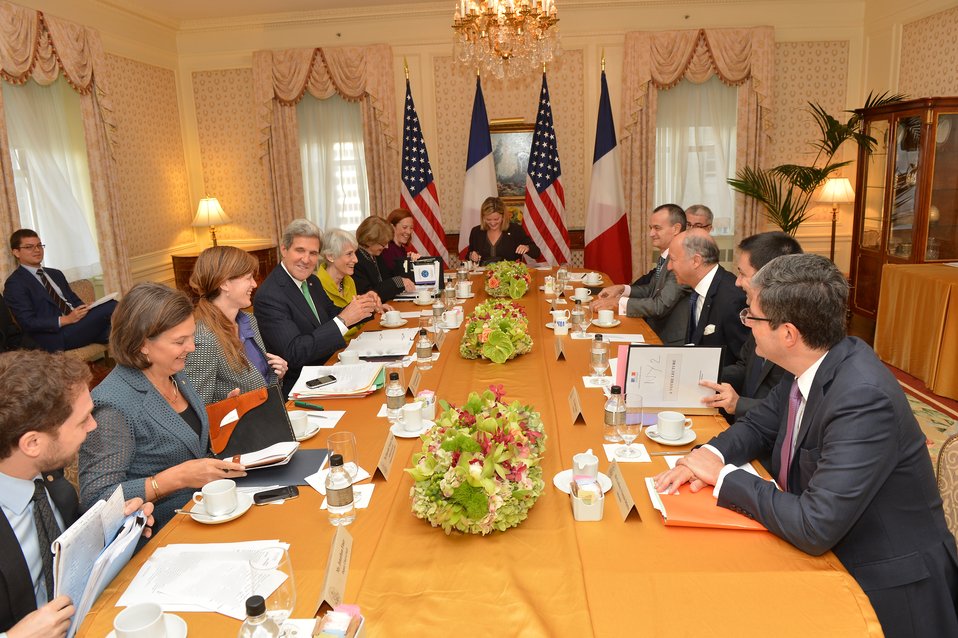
Secretary Kerry Meets With French Foreign Minister Fabius

U.S. Secretary of State John Kerry holds a bilateral meeting with French Foreign Minister Laurent Fabius in New York City on September 25, 2013.